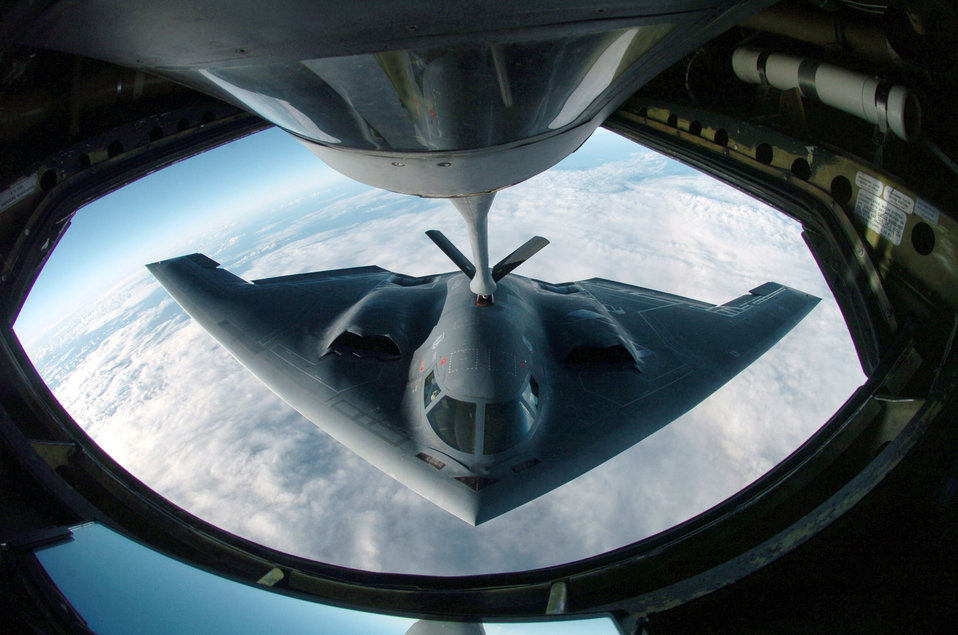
Spirits begin to soar

A B-2 Spirit bomber refuels from a KC-135 Stratotanker during a deployment to Andersen Air Force Base, Guam. The bomber deployed as part of a rotation that has provided U.S. Pacific Command officials a continuous bomber presence in the Asia-Pacific region, enhancing regional security and the U.S. commitment to the Western Pacific. The B-2 is from the 509th Bomber Wing at Whiteman AFB, Mo. The KC-135 is assigned to the Illinois Air National Guard's 126th Air Refueling Wing at Scott AFB, Ill.